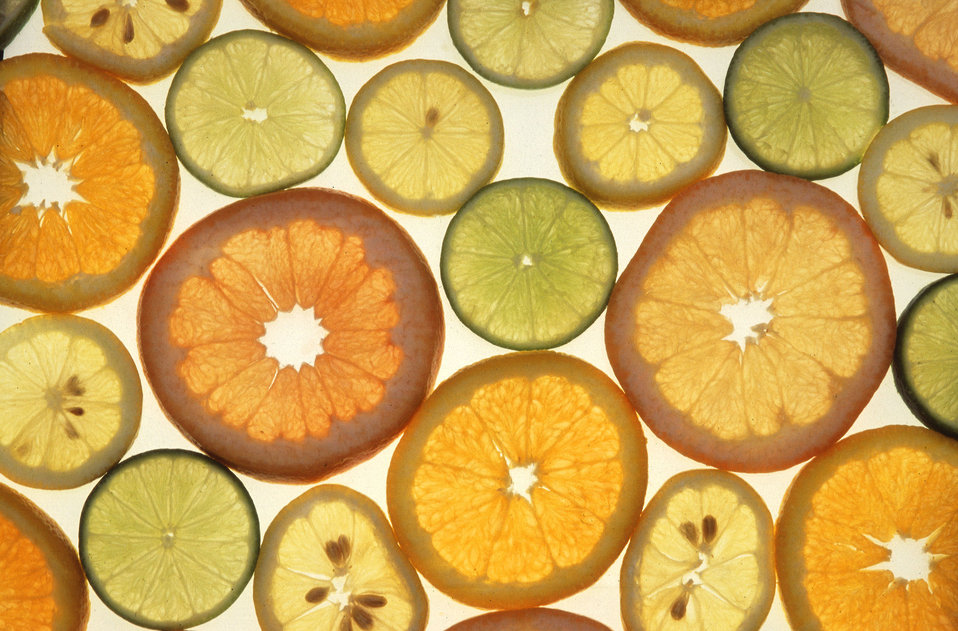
Slices of citrus fruit sit on a light table on Dec. 5, 2004. More than 70 percent of all citrus fruits grown in the U.S. are varieties developed by the U.S. Department of Agriculture’s (USDA) Agricultural Research Service (ARS) citrus breeding program.